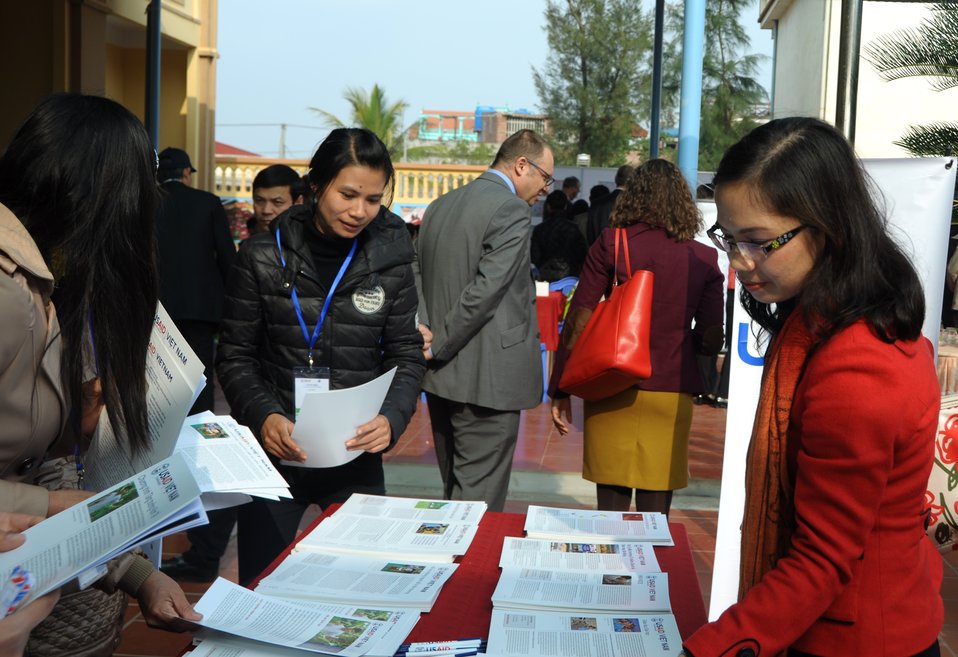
USAID launches the Vietnam Forests and Deltas project in Nam Dinh province.

Quat Lam, Nam Dinh. January 16, 2014.